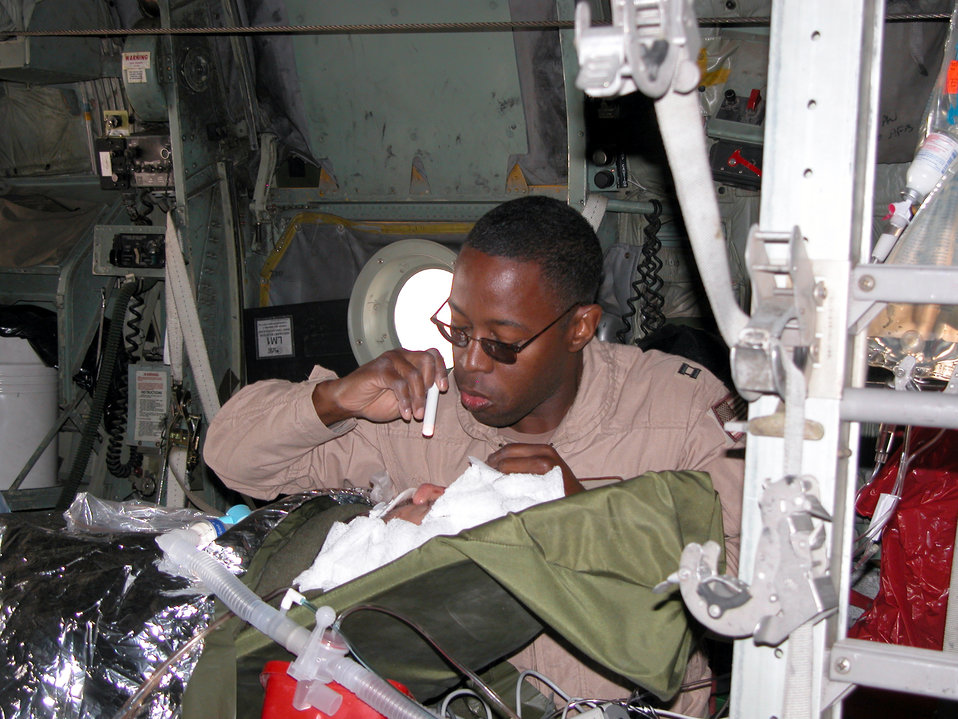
Medical care at 15,000 feet

SOUTHWEST ASIA -- Capt. Lionel Lyde checks on a patient during a medical evacuation flight to Baghdad aboard a C-130 Hercules on Jan. 28. Captain Lyde is a critical care air transport nurse with the 379th Aeromedical Squadron.